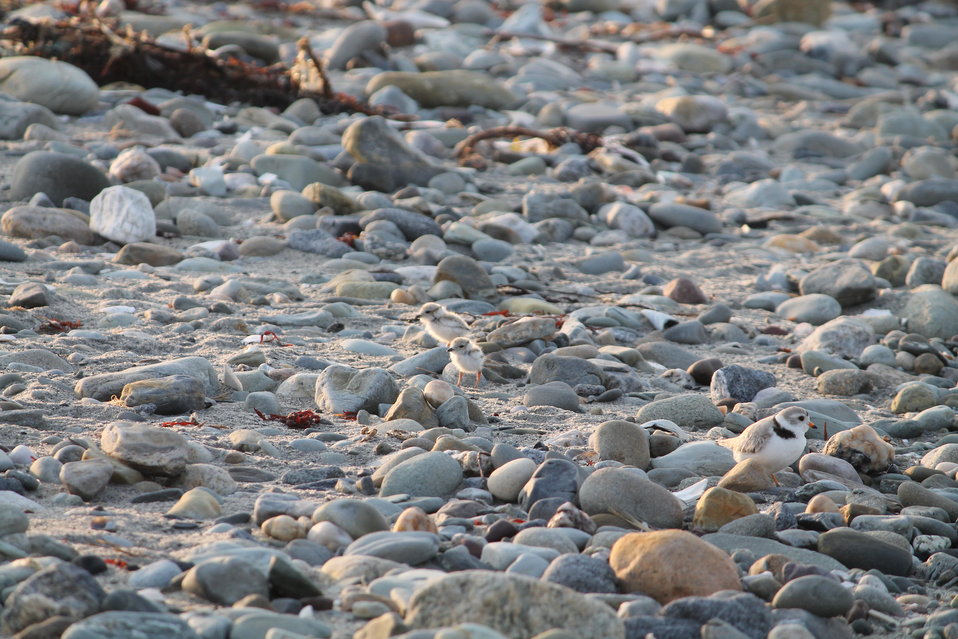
Piping Plover (RI)

Piping Plover chicks photographed at Second Beach in Middletown, Rhode Island.